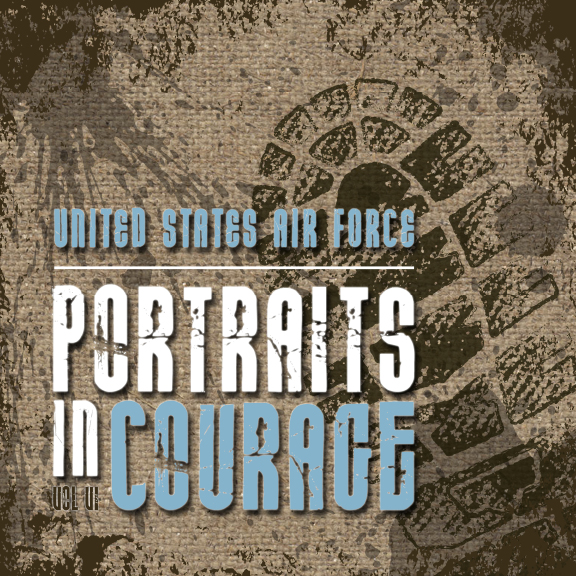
Portraits in Courage VI

File photo